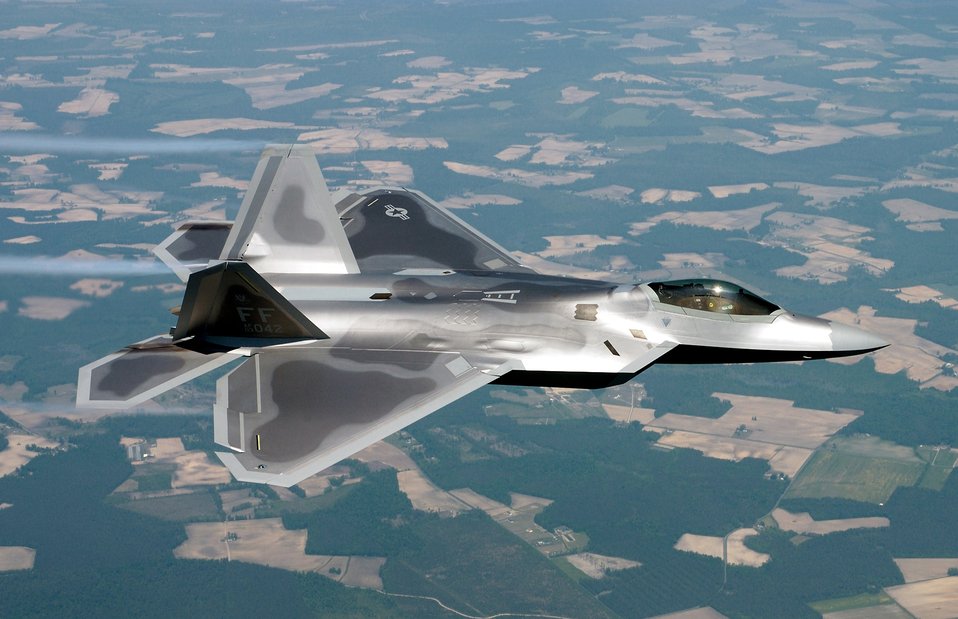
F-22 Rollout

An F-22 Raptor like this one has completed it's final assembly in the Lockheed Martin plant in Marietta, Ga., and is the first combat-capable fighter destined for basing and operations in the Pacific.